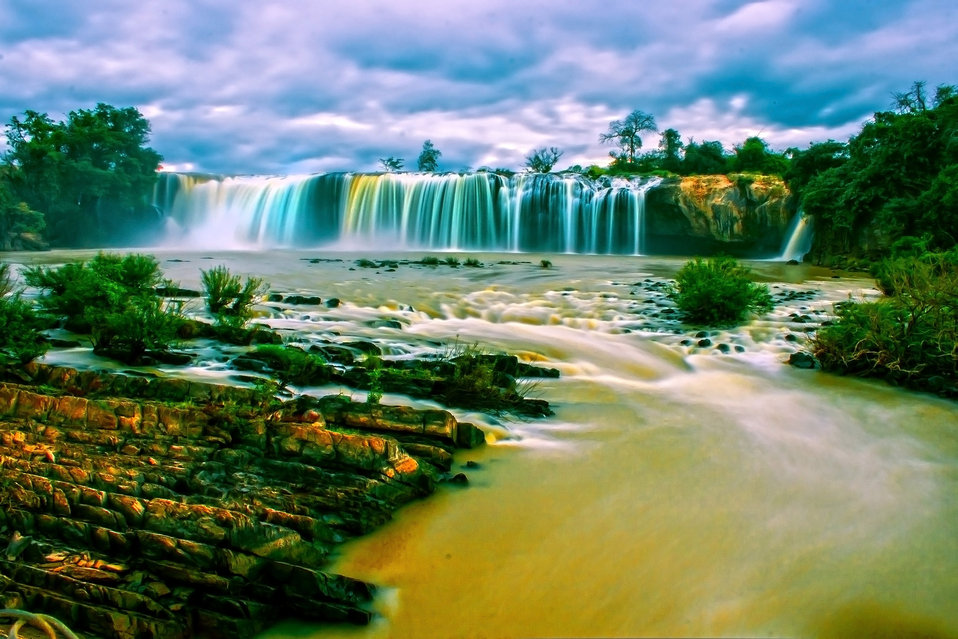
Waterfall

Dray nur water fall in the buon me thuot province, vietnam.